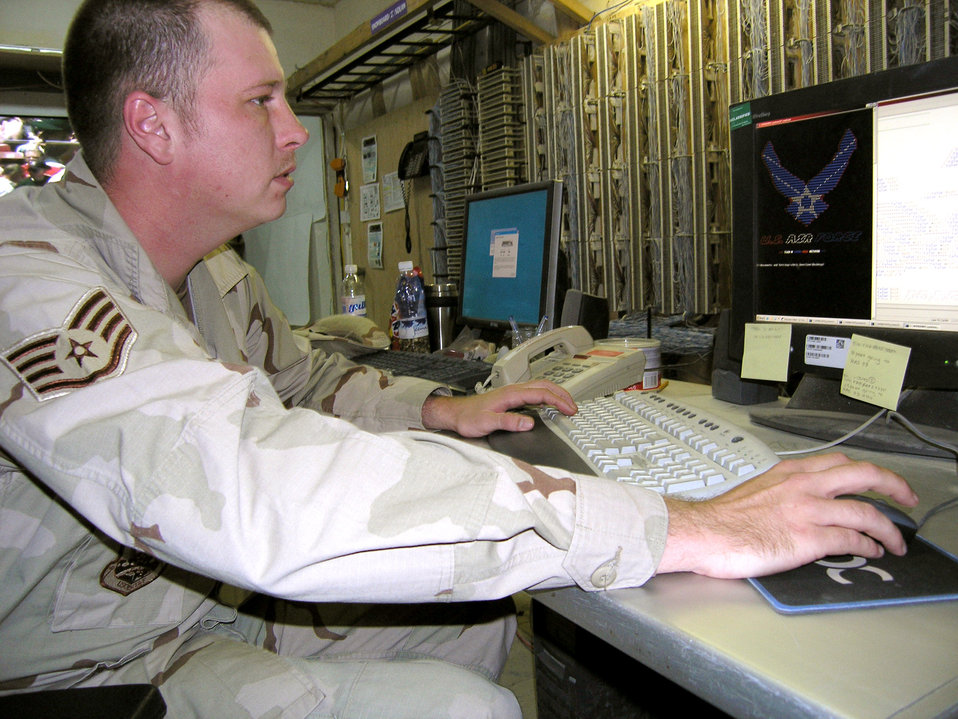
Airman crafts digital artwork for computer log-in scripts

ALI BASE, Iraq -- Staff Sgt. Chris Borslien recreates the Air Force symbol in American standard code for information interchange. He uses the alphanumeric characters to create digital artwork that each computer user sees when he or she logs onto the network. Logon scripts keep the computer safe from viruses and hackers by checking if each computer for current security patches. Sergeant Borslien is a network control center technician with the 407th Expeditionary Communications Squadron deployed from McConnell Air Force Base, Kan.